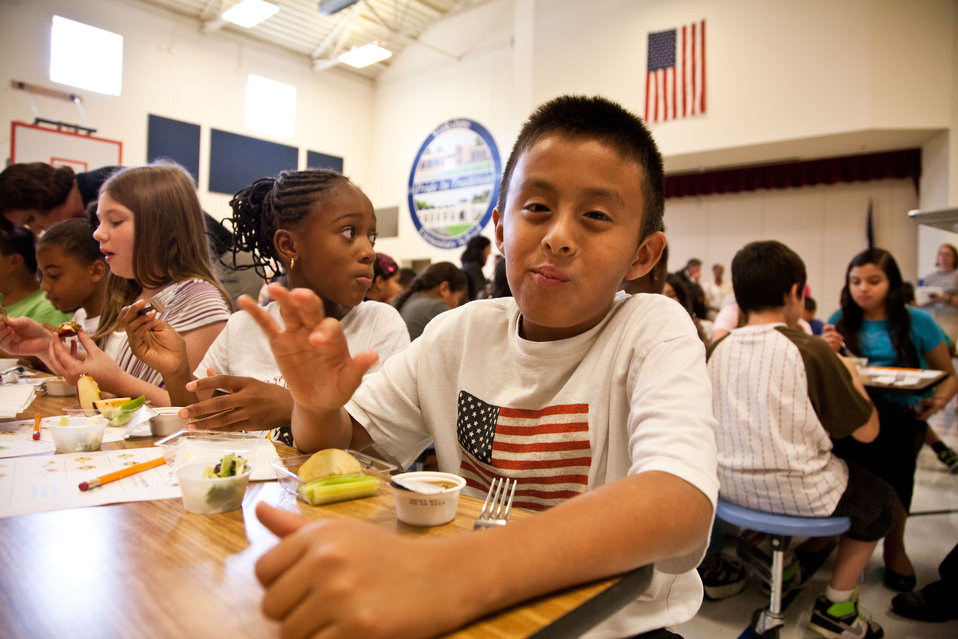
5th Grader Cristian Merino likes sunbutter, but was not so thrilled with the celery and gave the dish an 'eh' gesture as he and more than 50 students from the 5th grade classes at Yorkshire Elementary School in Manassas, VA., participated in a taste testing of the new school lunch menu created to meet the new standards. Students tested a sample menu of black-bean filled pizza, plantain, pineapple spear, sunny broccoli and cauliflower toss, and an apple and celery cup with sunbutter dip (a peanut butter substitution), on Wednesday, September 5, 2012.